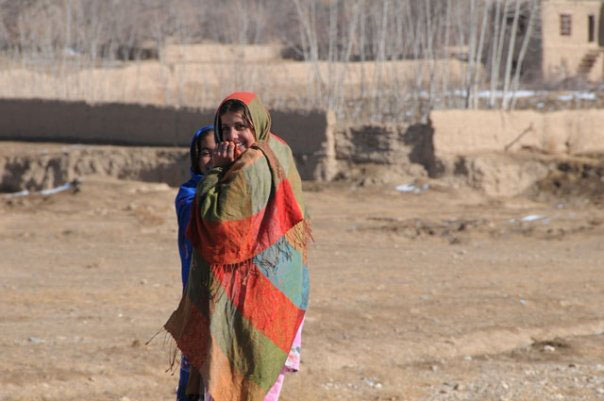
Sweet smiles

An Afghan girls smile as then-Tech. Sgt. Rebecca Corey snaps a shot in Ghazni province, Afghanistan, during her deployement to the region in 2009. On a medical visit to a local village, Corey gave the girls candy causing several local boys to try to steal it from them. Corey shooed them away, leaving the shy girls giggling happily and keeping the candy.